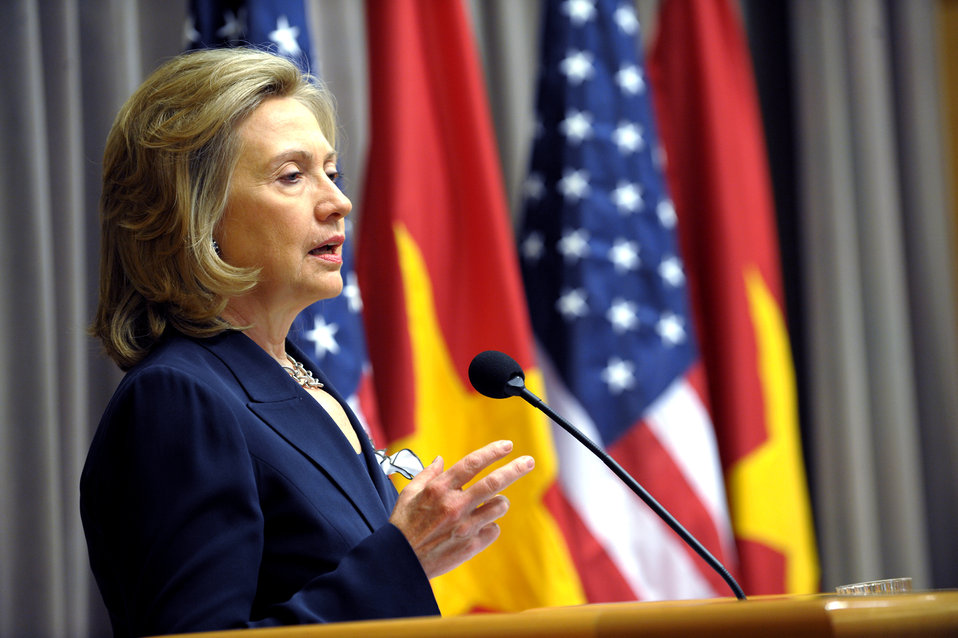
Secretary Clinton Delivers the Welcoming Remarks to the Historical Conference on the American Experience on Southeast Asia

U.S. Secretary of State Hillary Rodham Clinton delivers welcoming remarks to the Historical Conference on the American Experience on Southeast Asia at the U.S. Department of State in Washington, D.C., on September 29, 2010.